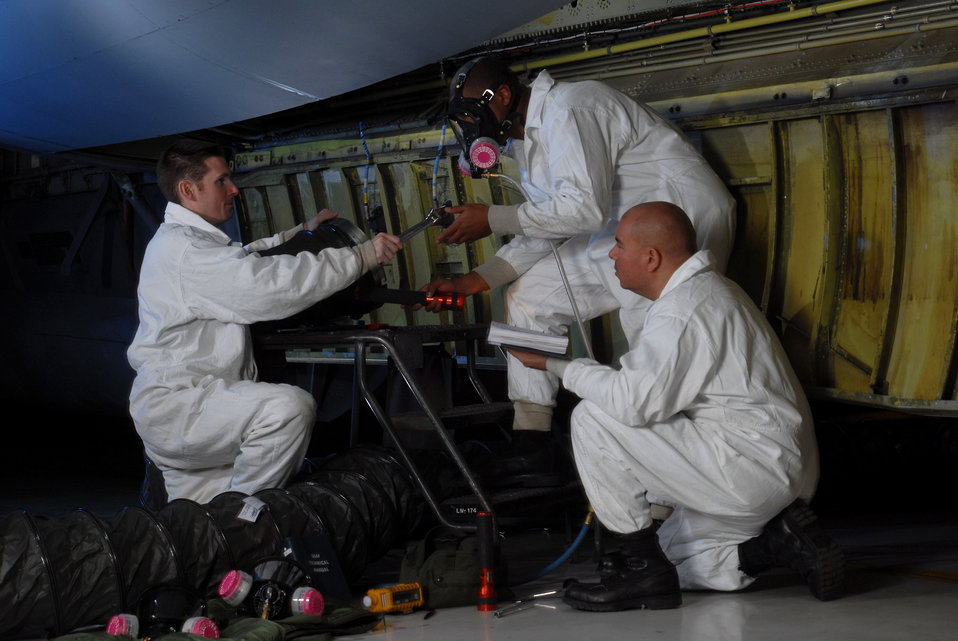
By the book

Senior Airman David Skannal, wearing a full-face supplied air respirator (center), receives a wrench from Staff Sgt. Ryan Slanina (left) while Tech. Sgt. Tim Burrola looks on before inspecting the interior of the center wing fuel tank of a KC-135 Stratotanker Jan. 9 at March Air Reserve Base, Calif. Airman Skanalla is wearing the respirator so he could breathe properly while troubleshooting inside the fuel tank for leaks. All three are fuel cell technicians from the 452nd Maintenance Squadron.